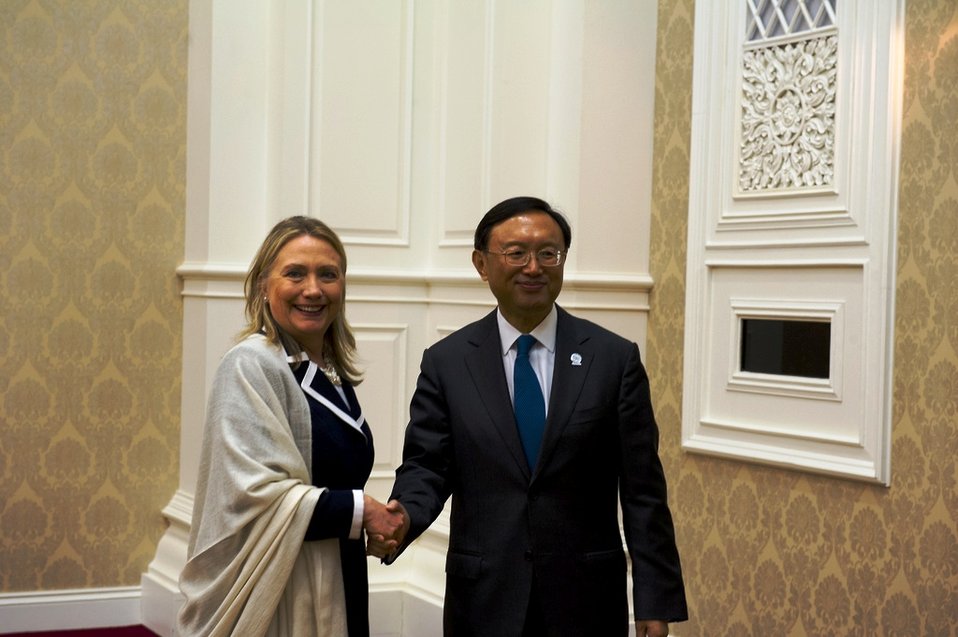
Secretary Clinton Meets With Chinese Foreign Minister Yang

U.S. Secretary of State Hillary Rodham Clinton meets with Chinese Foreign Minister Yang Jiechi in Phnom Penh, Cambodia, on July 12, 2012.